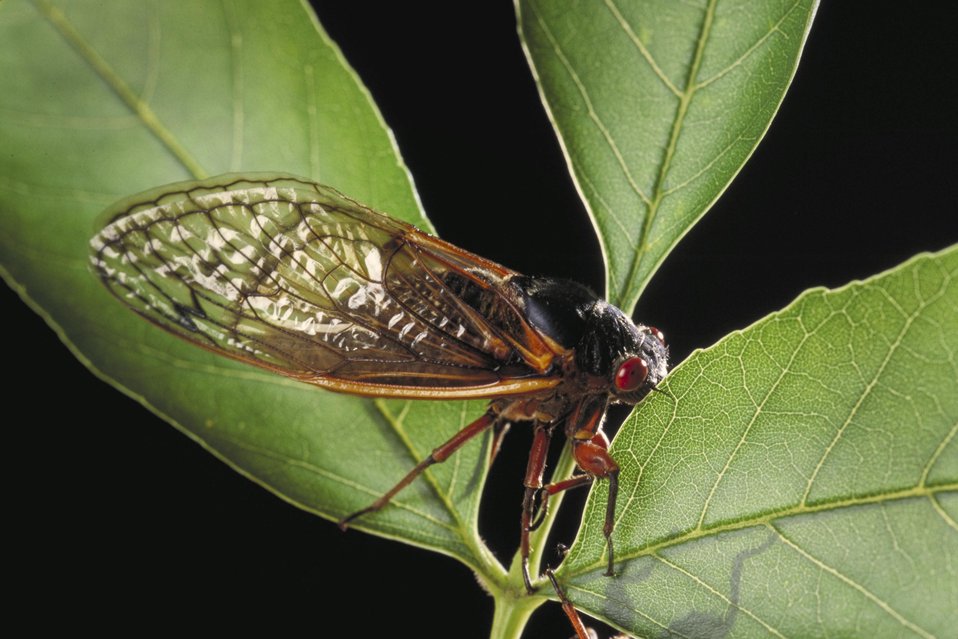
In the early spring of 2013 the eastern half of the U.S. will see and hear the emergence of the 17-year Cicada (Magicicada). The 17-year Cicada is a large insect with a black body, red eyes, and delicate wings about an inch and a half long. The Cicada will emerge from the ground as nymphs, climb onto trees and shed their skins. The males will then sing loudly to attract female mates. Once mated the females lay approximately 400 to 600 eggs in tree branches before they die. The nymphs hatch and burrow into the ground and live underground for the next 16 years sucking sap out of tree roots. The cicada’s above ground cycle lasts about a month before they die. Cicada’s have no sting or bite and are harmless to humans and pets, however the constant singing is annoying.